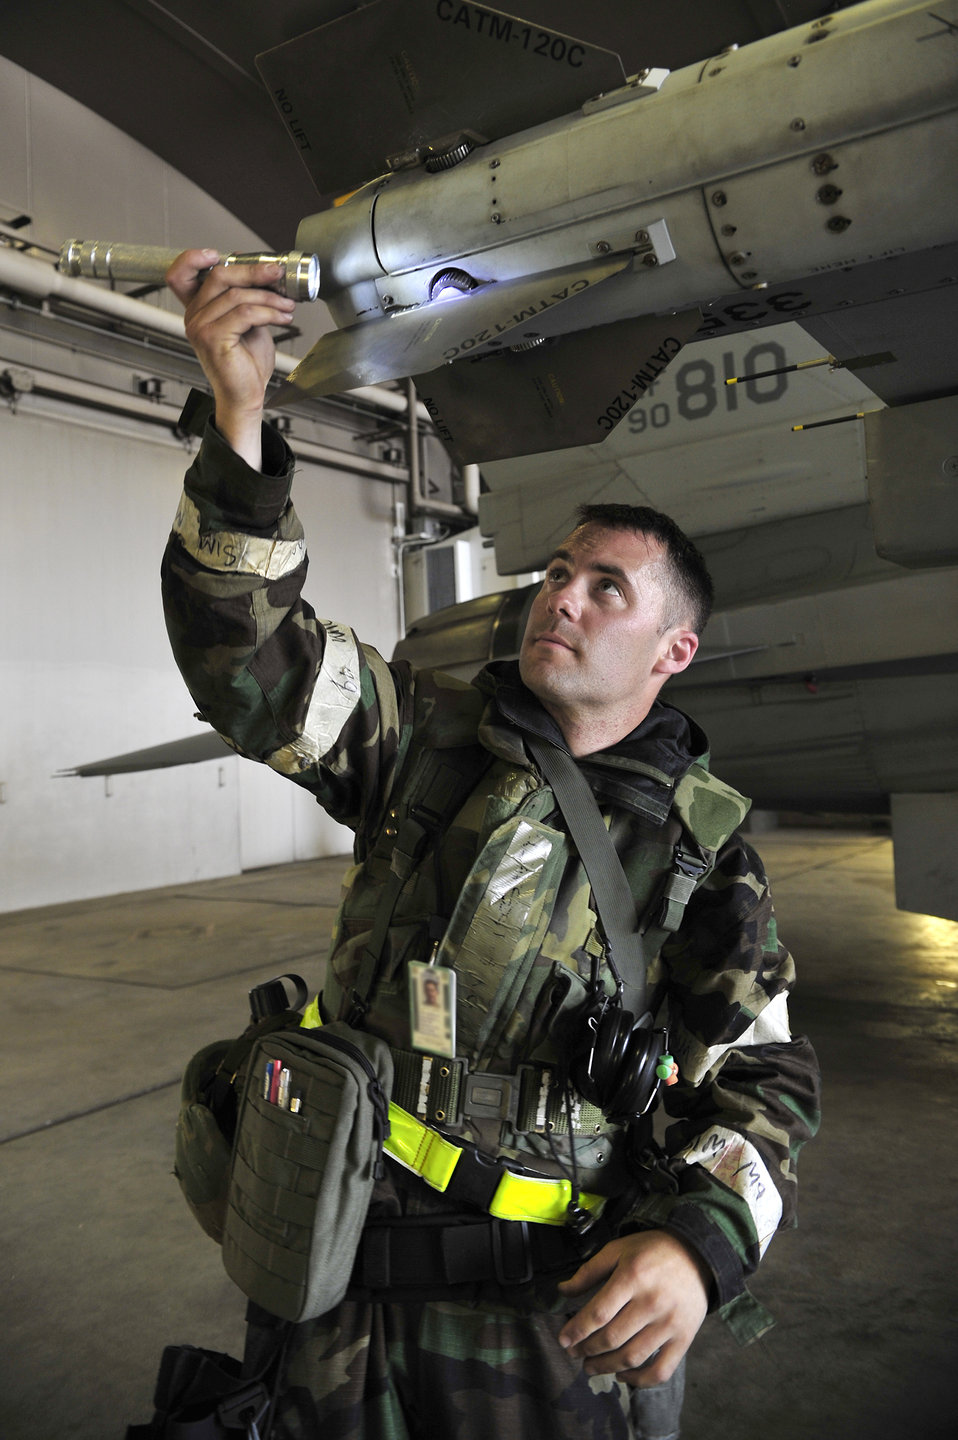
Exercise at Misawa

Staff Sgt. Patrick Cannon prepares an F-16 Fighting Falcon conducts preflight checks June 22, 2011, during an exercise at Misawa Air Base, Japan. Sergeant Cannon is a weapons loader assigned to the 14th Aircraft Maintenance Unit.